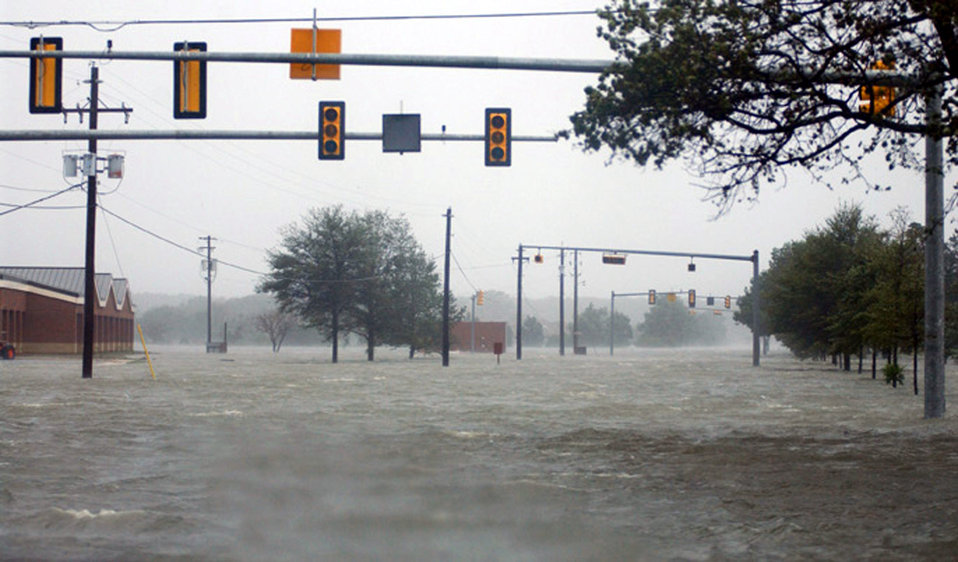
Roughin' the storm

LANGLEY AIR FORCE BASE, Va. -- Flood waters from Hurricane Isabel rendered one of Langley's main streets virtually impassable Sept. 18.